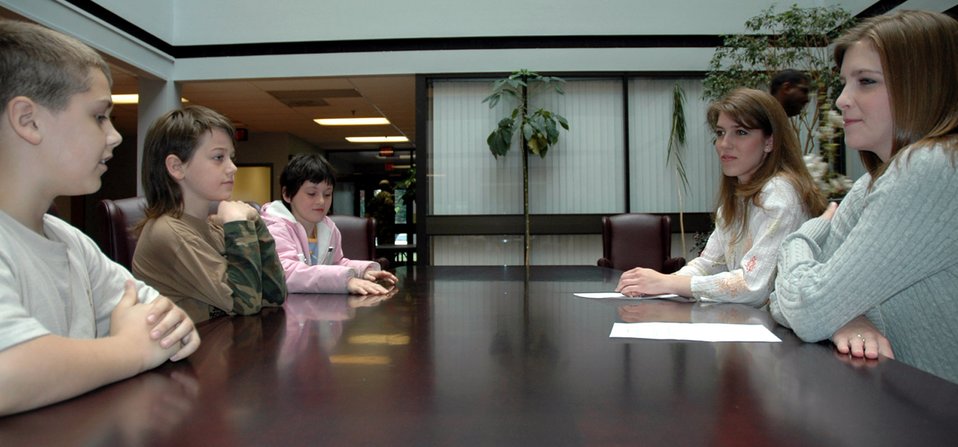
Homeschoolers, Air Force legal office conduct fairytale trial

Members of the mock jury discuss the facts from the case, State of Italia v. Gepetta, and decide on the verdict at the Air Force Court of Criminal Appeals April 27.